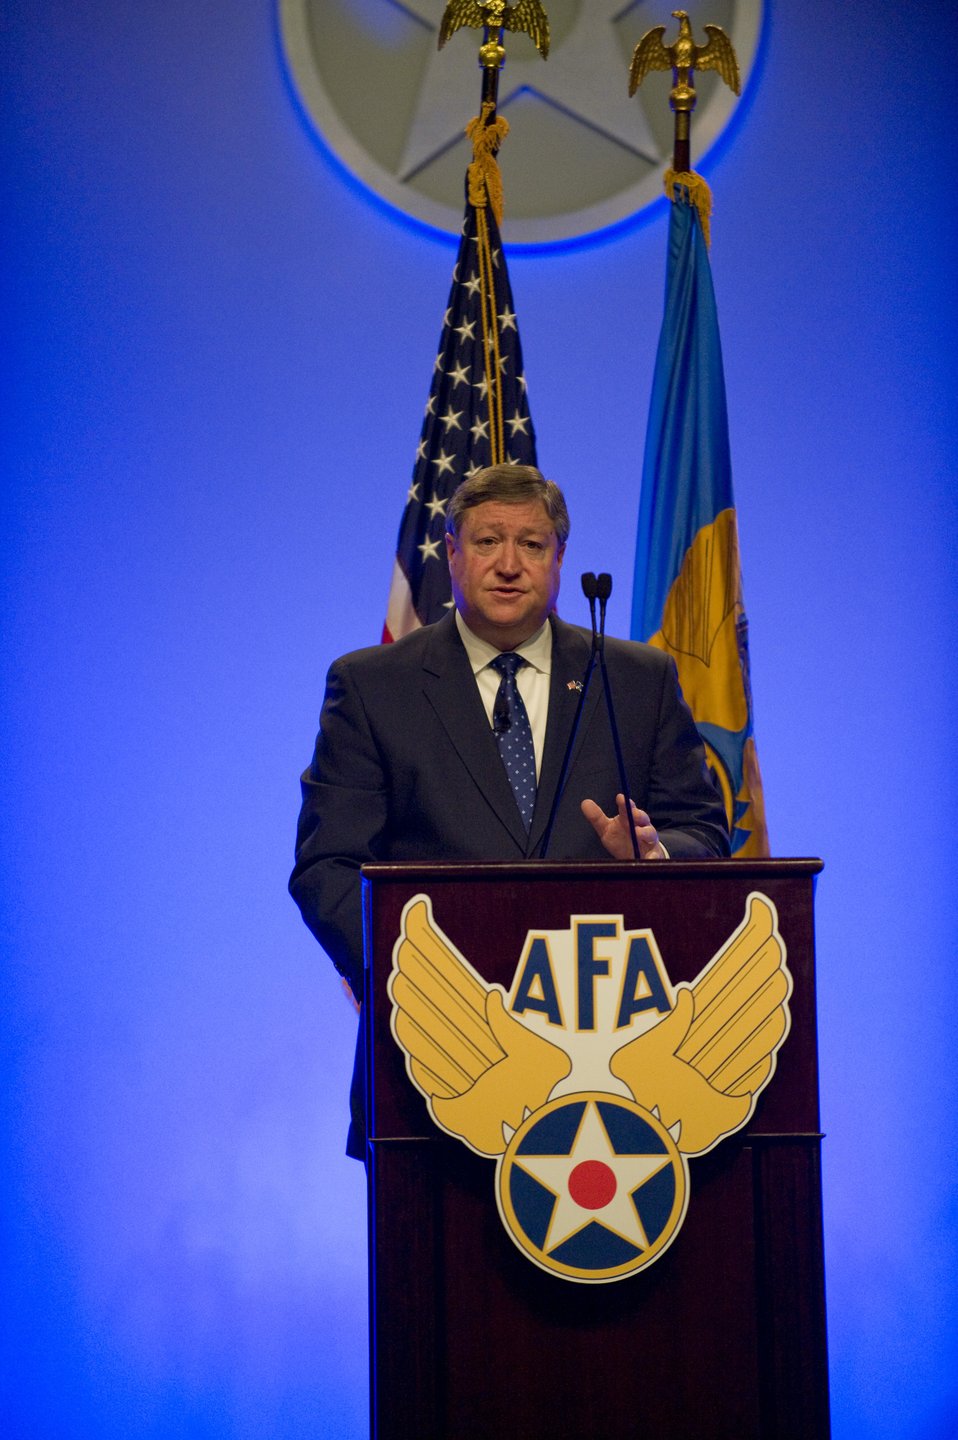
Secretary Donley addresses steps to strengthen Air Force

Air Force Secretary Michael Donley discusses the Air Force's top priorities during the Air Force Association's Air Warfare Symposium and Technology Exposition Feb. 18, 2010, at the Rosen Shingle Creek Hotel in Orlando, Fla.